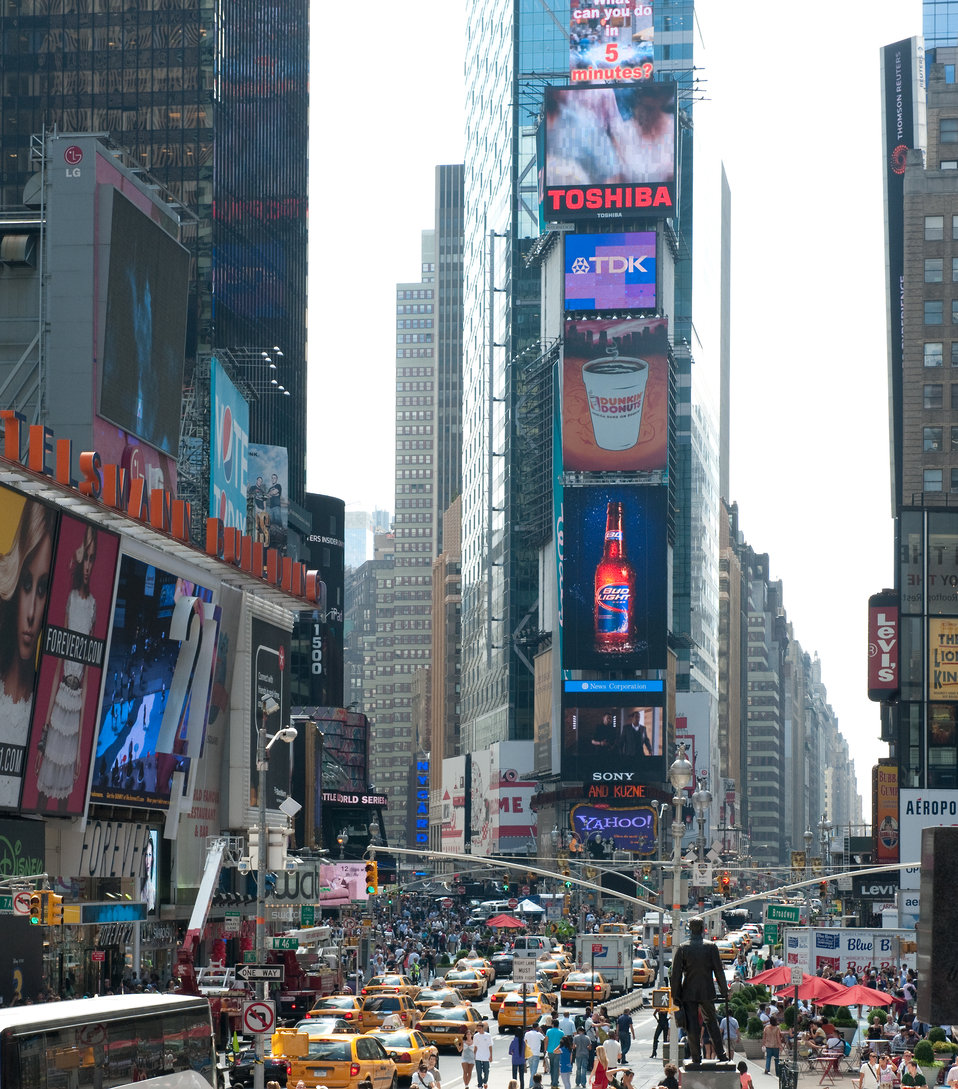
Air Force Week Now Showing in Times Square

Air Force Week New York City came to Times Square Aug. 26, 2010.